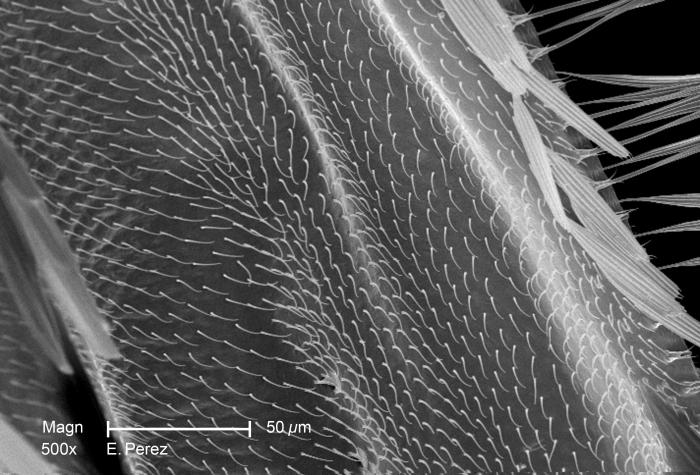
At a magnification of 500X, 3.3X greater than that of PHIL 10513, this scanning electron micrograph (SEM) reveals the presence of numerous sensorial 'hairs', or setae, and striated scales found on the surface of one of two wings of an unidentified mosquito discovered in the suburbs of Decatur, Georgia. Note that PHIL 10517 and 10518 depict these morphologic features in even greater detail.